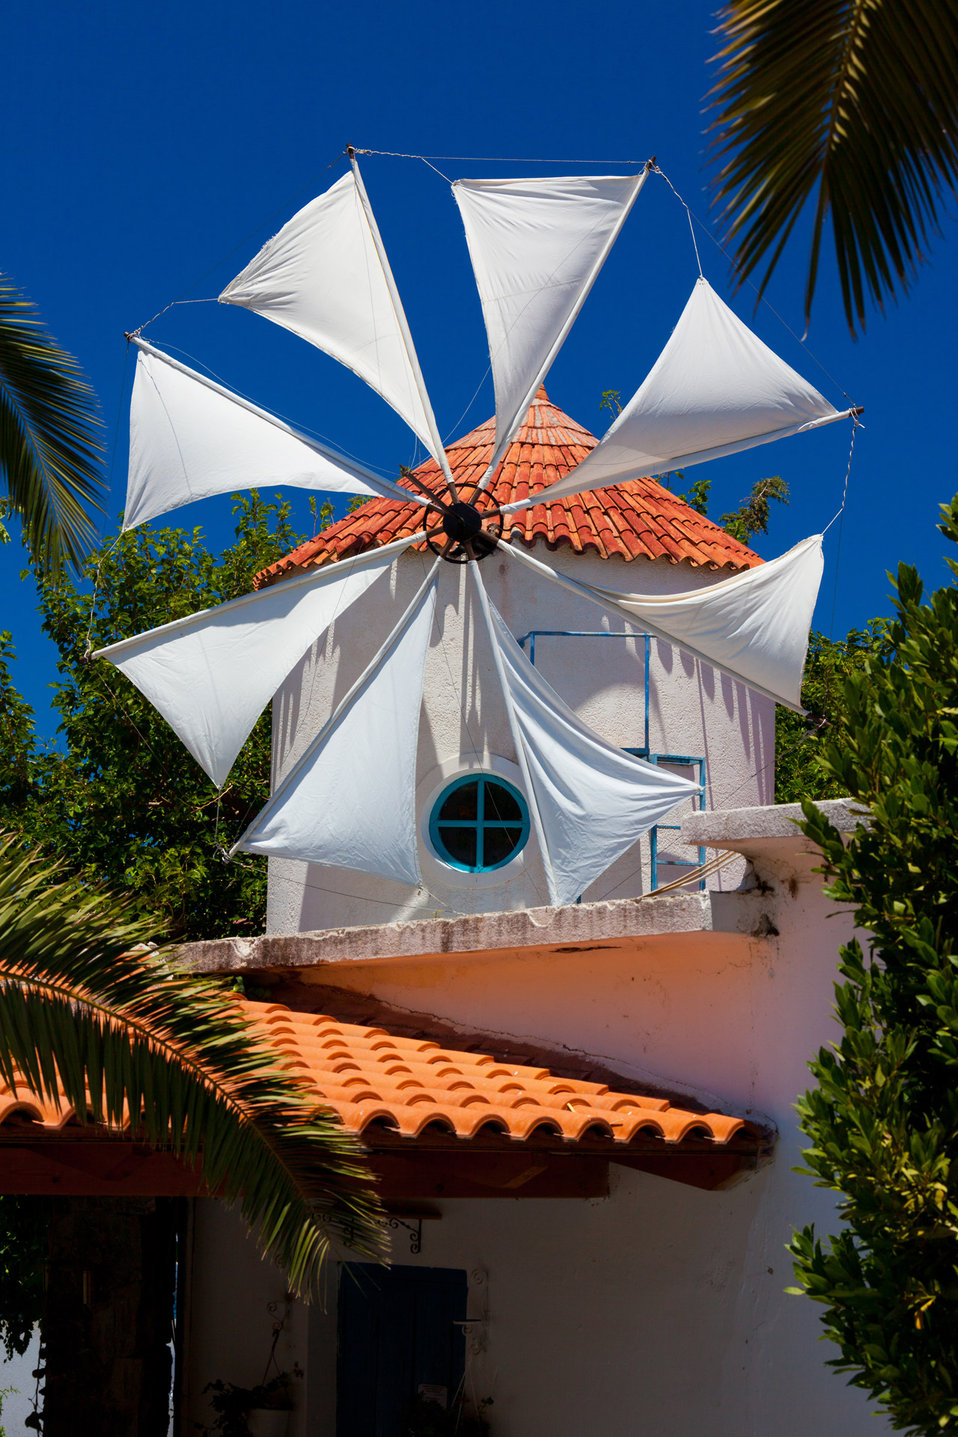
Cretan windmill

Traditional windmill in crete.